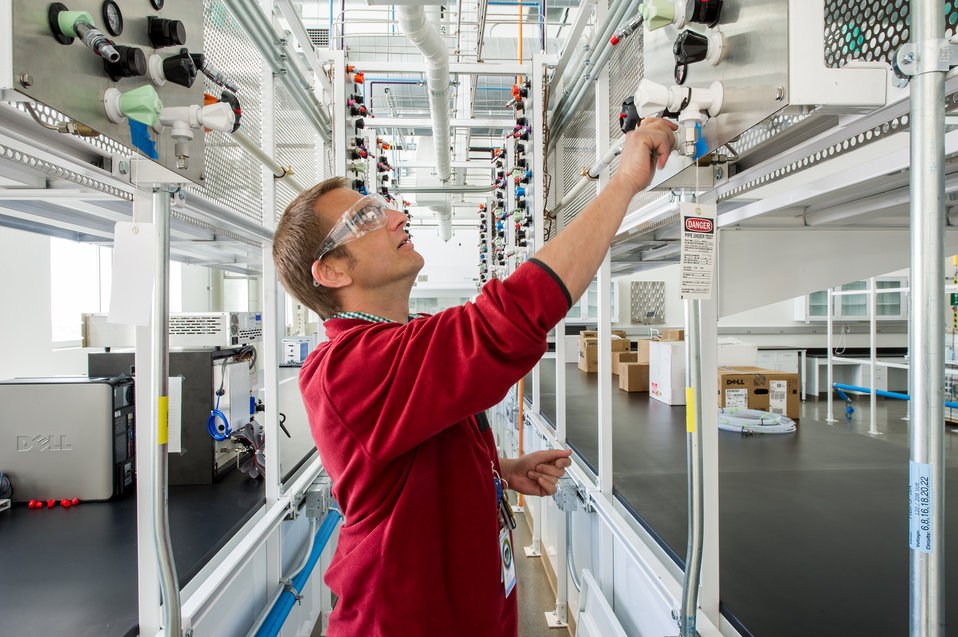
Energy Systems Integration Facility (ESIF), research web line, hydrogen lab,gas manifold corridor for cell testing, Fuel Cell Test and Development Lab

May 02, 2013 - NREL researcher Guido Bender, works on gas manifold corridor for cell testing in the Fuel Cell Test and Development Lab at the Energy Systems Integration Facility (ESIF) at the National Renewable Energy Laboratory in Golden, Colorado.